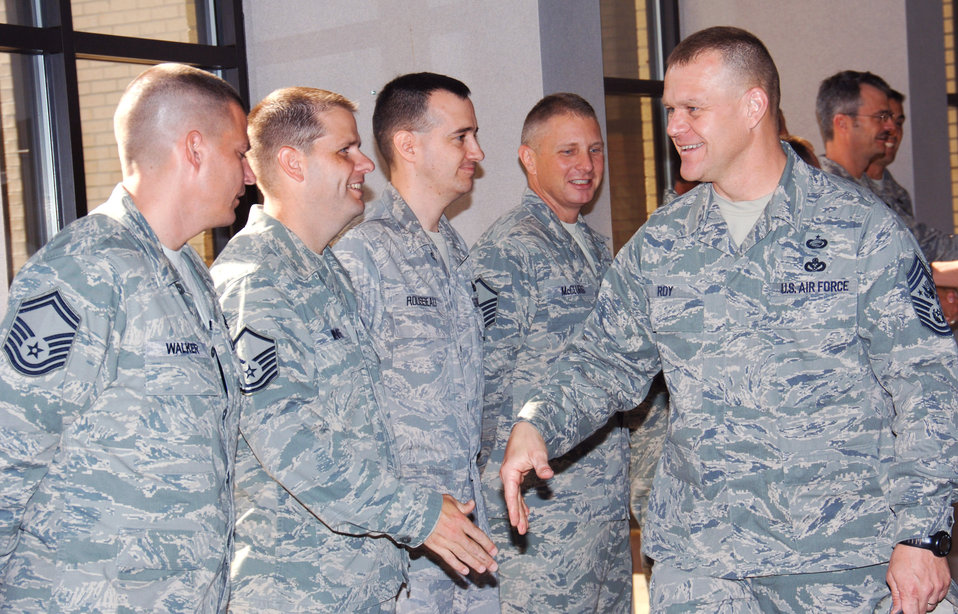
Top enlisted leader visits Maxwell-Gunter

Chief Master Sgt. of the Air Force James A. Roy (right) meets members of the Senior NCO Academy staff Sept. 25, 2009, at Gunter Annex of Maxwell Air Force Base, Ala.